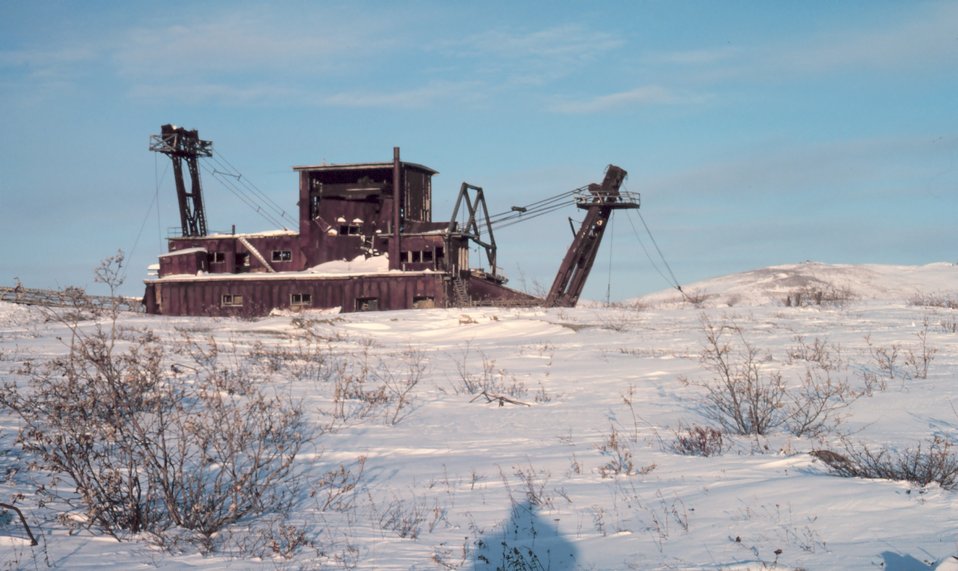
An old gold dredge west of Nome.